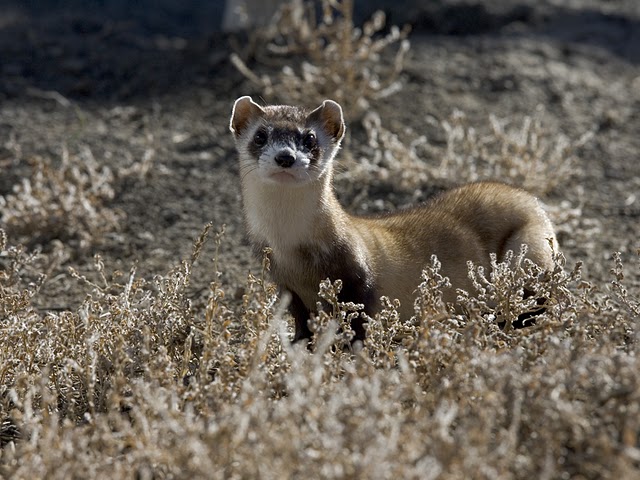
Black-footed Ferret in Preconditioning Pen

Preconditioning is an important pre-cursor to reintroducing captive bred black-footed ferrets into the wild. Ferrets are placed in outdoor pens for a minimum of 30 days. While in these pens, they are exposed to natural burrow systems and have the opportunity to encounter live prairie dogs. Most preconditioning is conducted at the National Black-footed Ferret Conservation Center in Colorado.